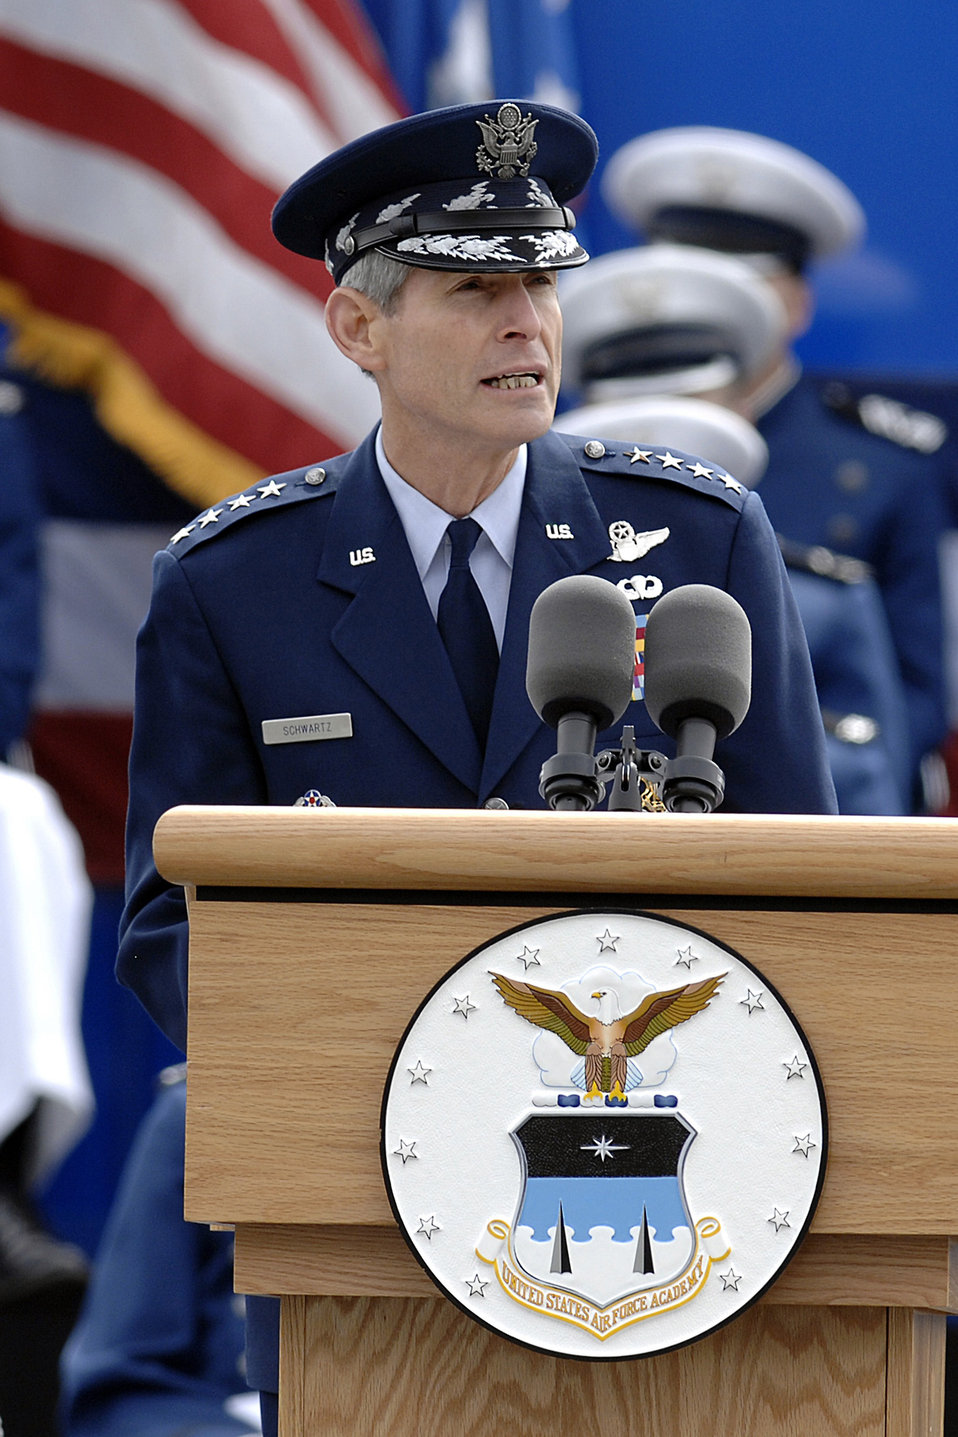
Academy class of 2011

Air Force Chief of Staff Gen. Norton Schwartz congratulates the Air Force Academy's Class of 2011 during a commencement ceremony May 25, 2011, at Falcon Stadium in Colorado Springs, Colo. General Schwartz is the Air Force's 19th chief of staff and a 1973 graduate of the Academy.